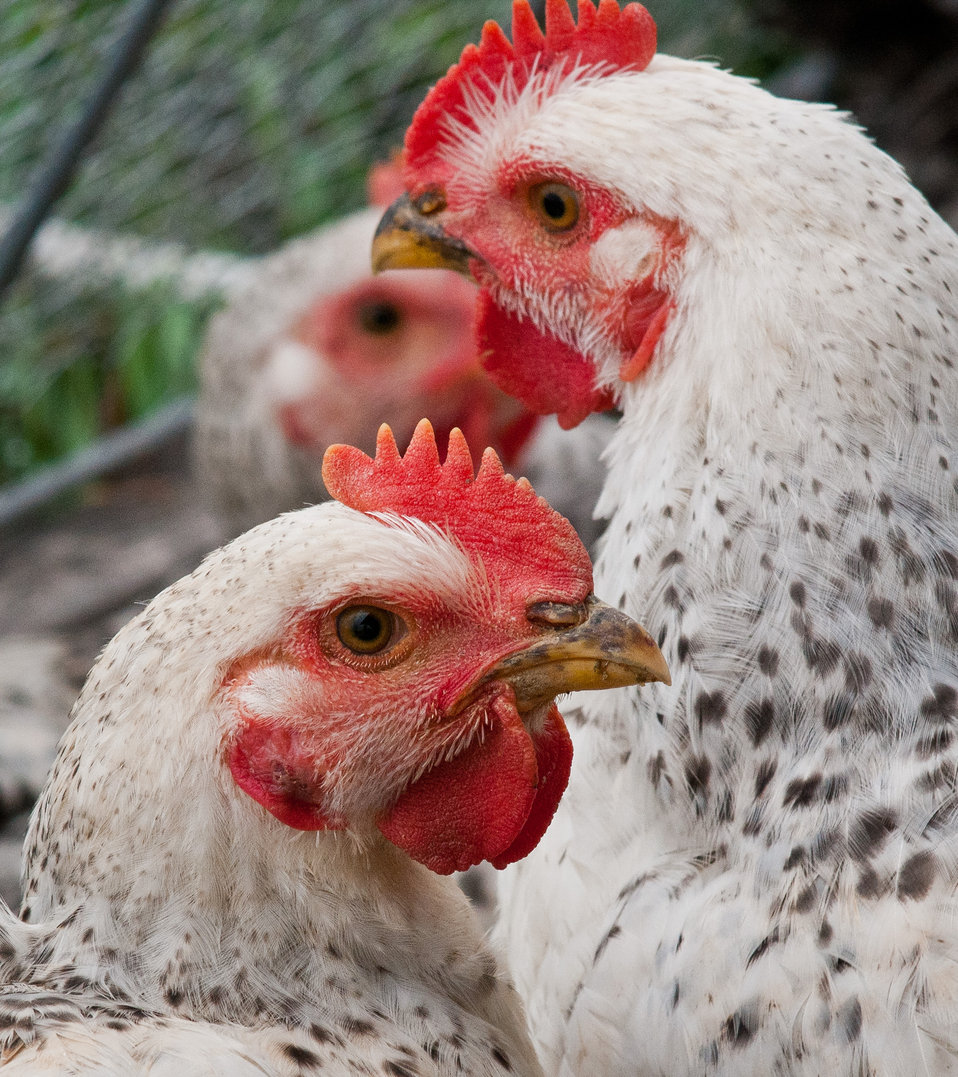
Broiler chickens graze on organic pastures and live in pens that protect them from predators, direct sun light, and wind at Nick’s Organic Farm, owned by Nick Maravell in Adamstown, MD on Friday, July 12, 2013. The enclosures are light enough to be moved by hand, each day, one consecutive section at a time. This allows the pasture to easily recover from the grazing. The farm produces Black Angus beef, chicken, turkey, eggs, hay, soybeans, corn, alfalfa, orchard grass, rye; and other crops. The cattle are100% grass-fed receiving certified organic pasture, certified organic hay (in winter), water and mineral salts mixed with sea kelp. The cattle are not fed hormones, antibiotics or animal products. Poultry feed from grain is ground from organic grain. The poultry also graze on organic pastures. The farm has conducted on-farm research with federal, state and non-profit agencies to refine organic practices. An organization such as the U.S. Department of Agriculture (USDA) Agricultural Research Service (ARS) center in Beltsville has been able to conduct research to improve organic crops and to breed and manage the cattle so that they have.